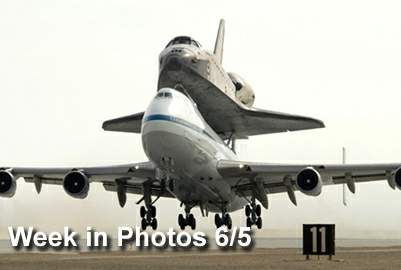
Air Force Week in Photos for June 5 highlights photos from around the Air Force. In this NASA photo, a NASA-modified Boeing 747 carries Space Shuttle Atlantis off the runway at Edwards Air Force Base, Calif., June 1 on the first leg of the ferry flight back to the Kennedy Space Center in Florida.